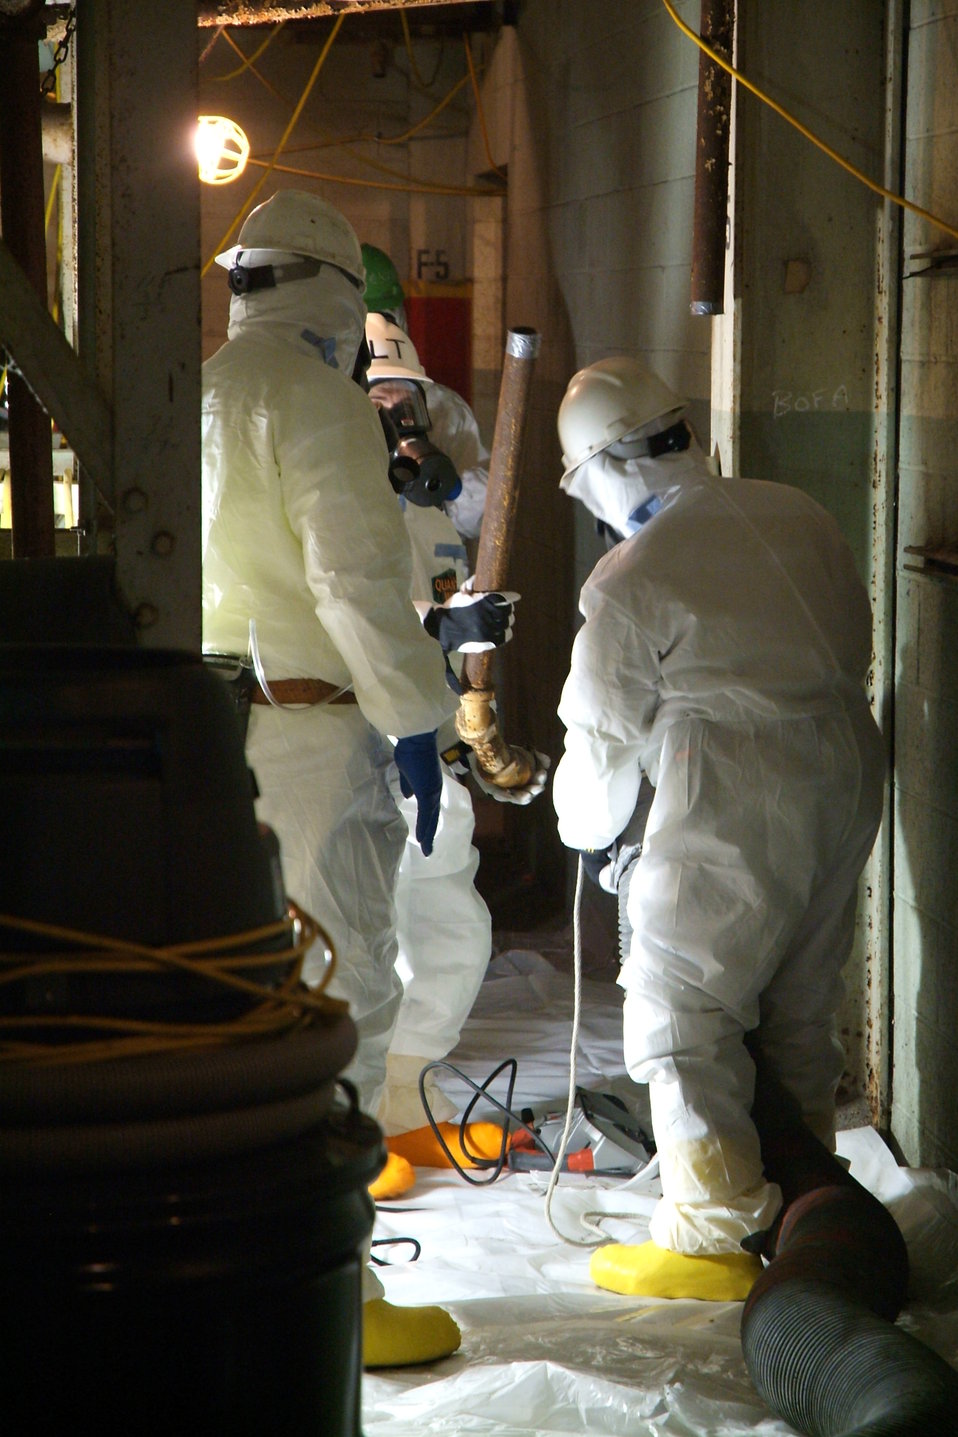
Paducah Recovery Act cleanup

Recovery Act workers dismantle vacuum piping near the Slag Building of the old Metals Plant at DOE’s Paducah Site.